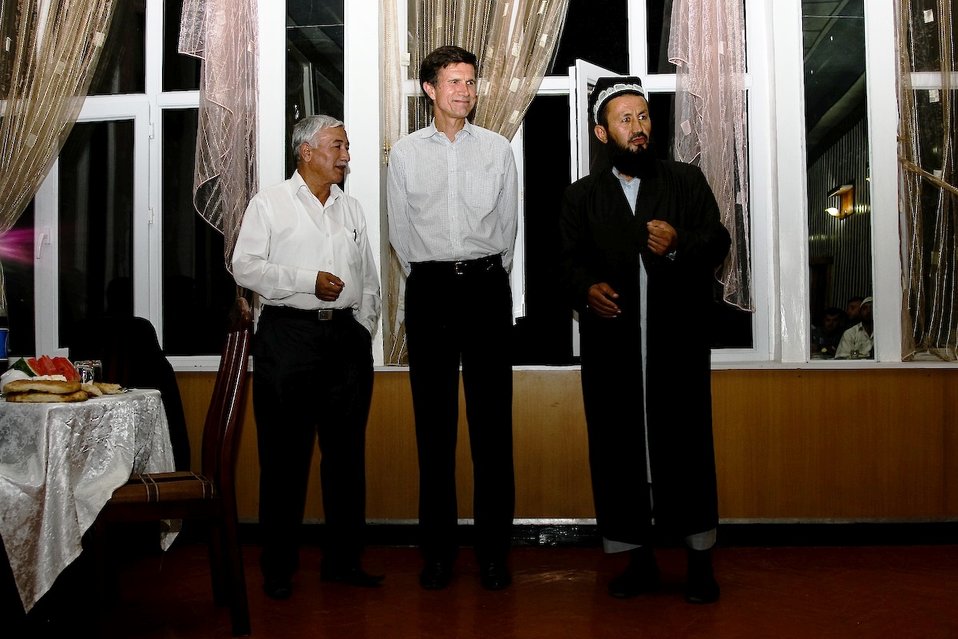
Assistant Secretary Blake Participates in a Ramadan Celebration in Tajikistan

U.S. Assistant Secretary of State Robert O. Blake participates in a Ramadan celebration in Dushanbe, Tajikistan, on August 31, 2010.